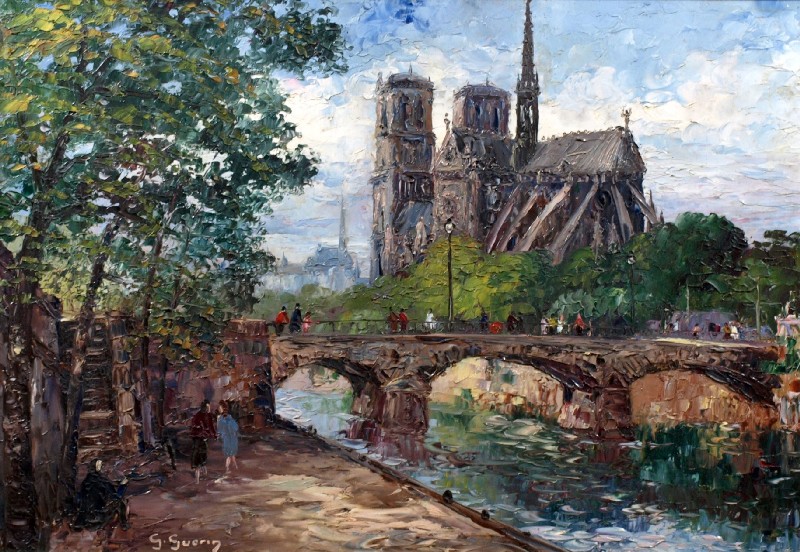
Deutsch: Notre Dame de Paris, signiert, Öl auf Karton, 38 x 55 cm